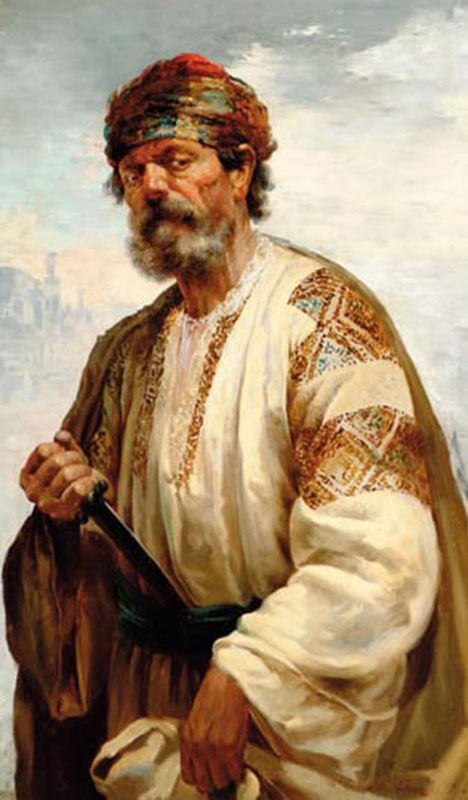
Alfredo Valenzuela Puelma - Bandolero